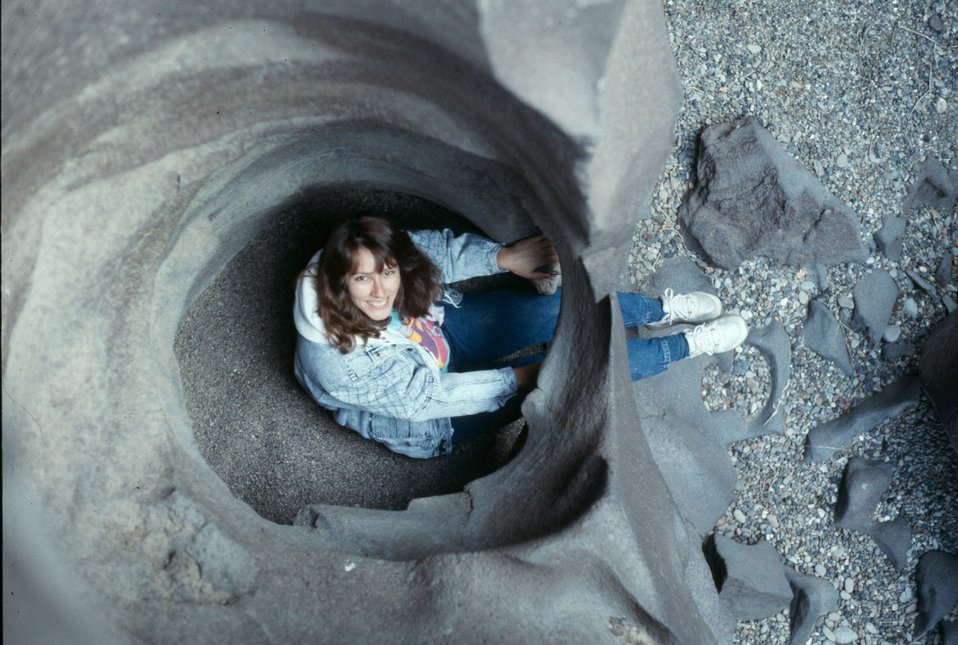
Large pothole Shoshone Field Office USRD Upper Snake River District